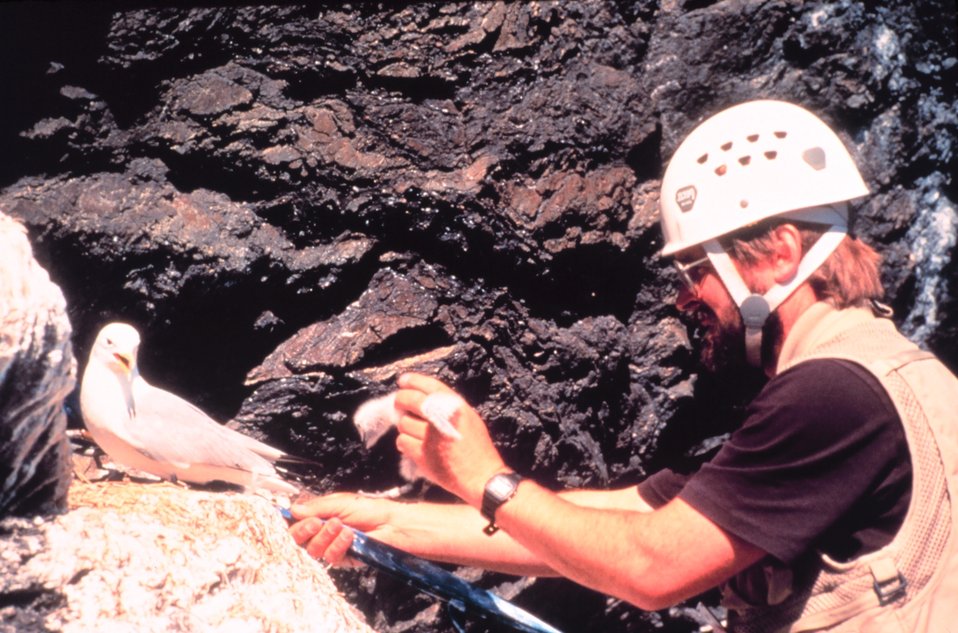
Oiled seal.